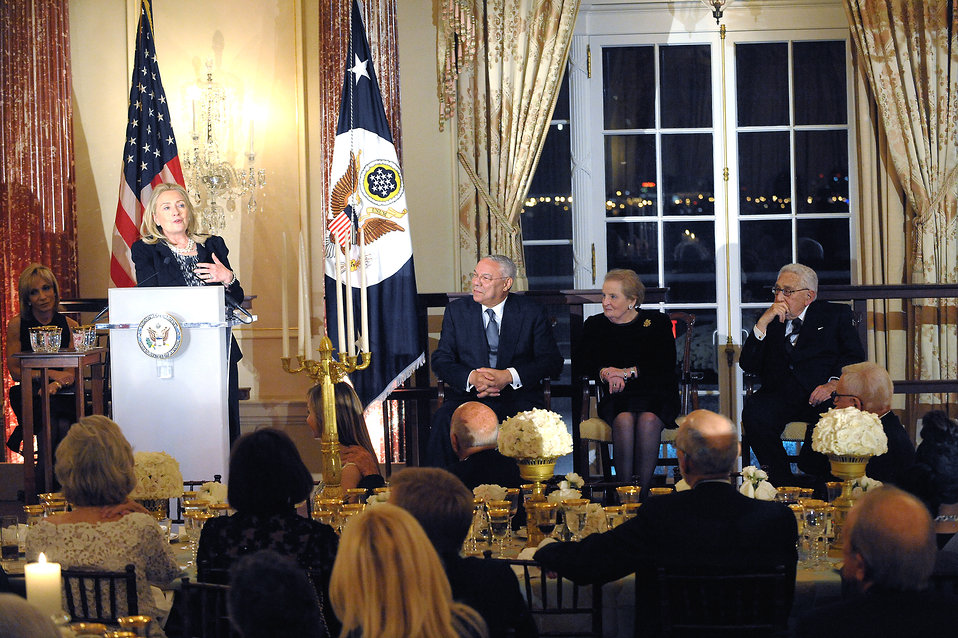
Secretary Clinton Celebrates the 50th Anniversary of the Diplomatic Reception Rooms

U.S. Secretary of State Hillary Rodham Clinton delivers remarks commemorating the 50th Anniversary of the Diplomatic Reception Rooms and the Completion of the Patrons of Diplomacy Endowment Campaign with former Secretaries of State General Colin Powell, seated on the left; Madeleine Albright, seated in the center; and Henry Kissinger, seated on the right; at the U.S. Department of State in Washington, D.C., on October 27, 2011.